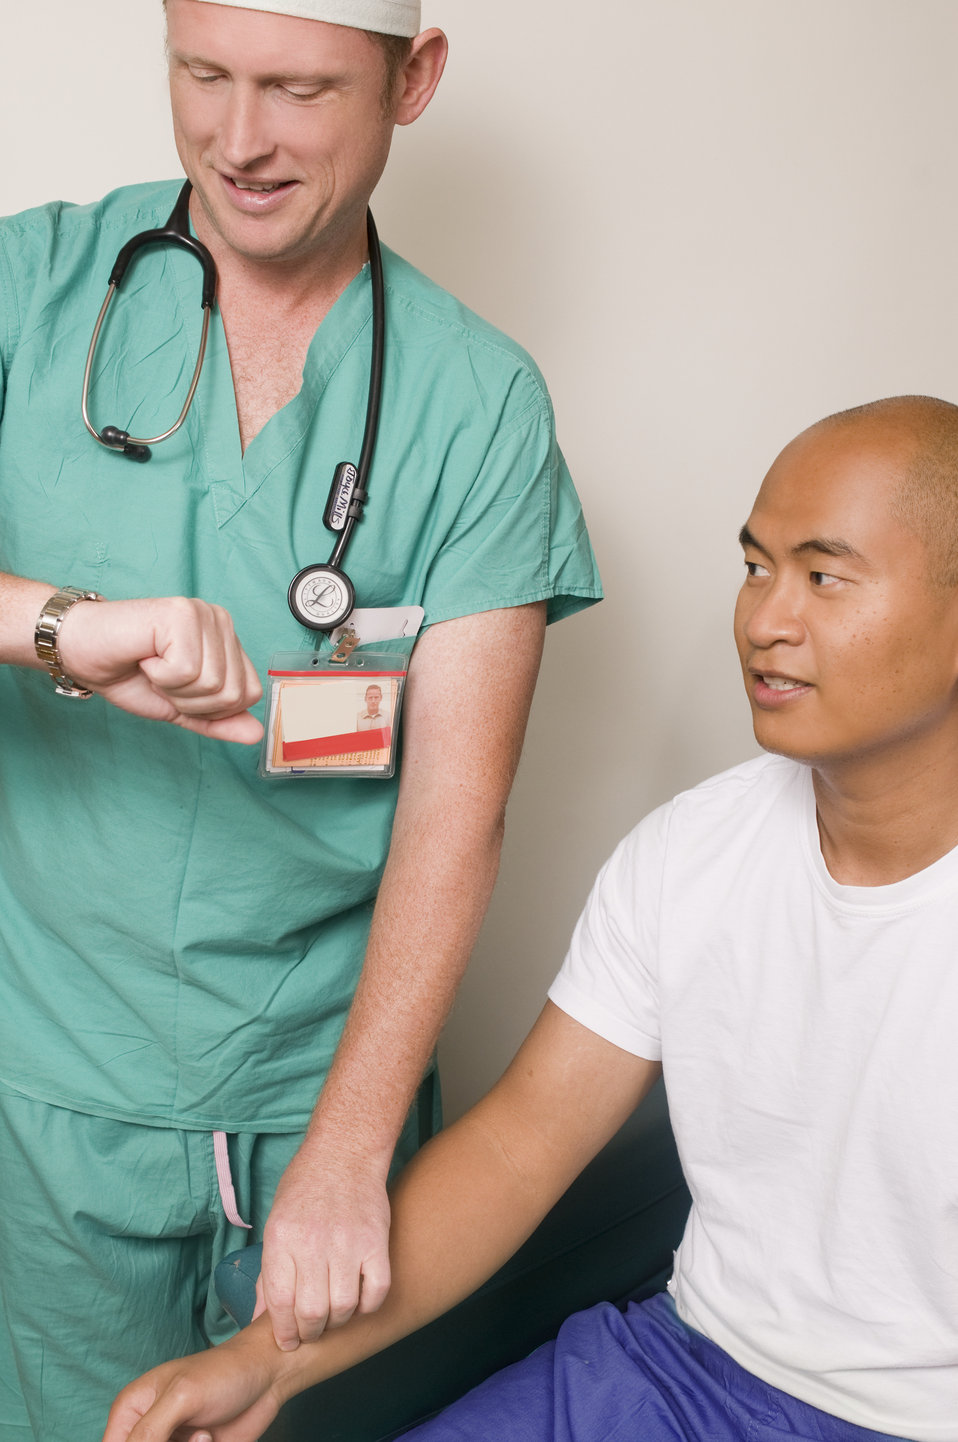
During his physical examination, this seated male patient was having his pulse rate determined by his attending physician, as he held his right wrist at the region of the radial artery.